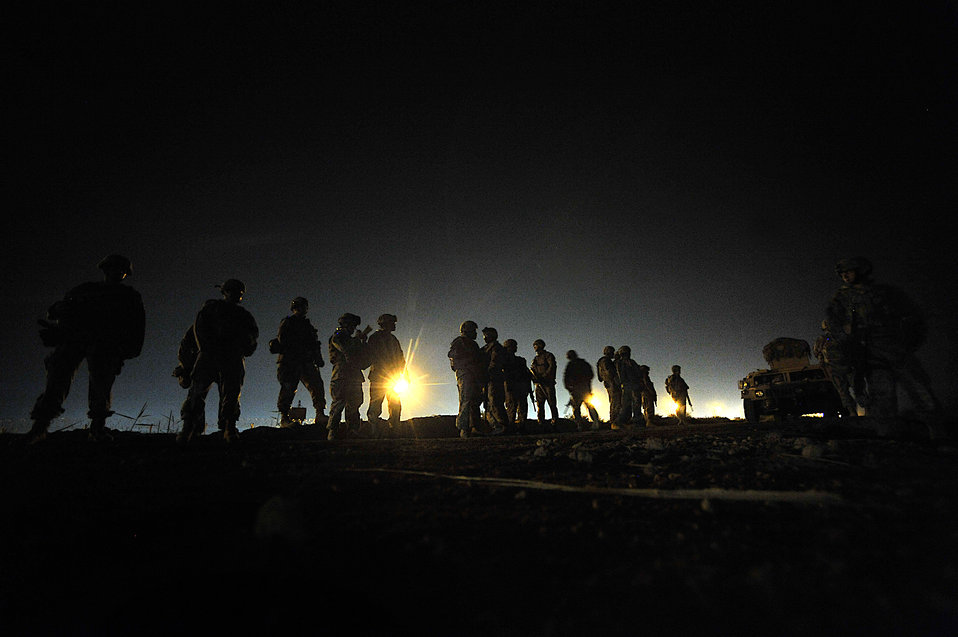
Joint patrol provides Airmen with valuable knowledge

Airmen and Soldiers prepare for Operation Lewis and Clark Sept. 11 at Joint Base Balad, Iraq. Operation Lewis and Clark was a joint patrol in which Air Force security forces Airmen were introduced to Balad's outer perimeter, an area in which they will assume responsibility from the Army.